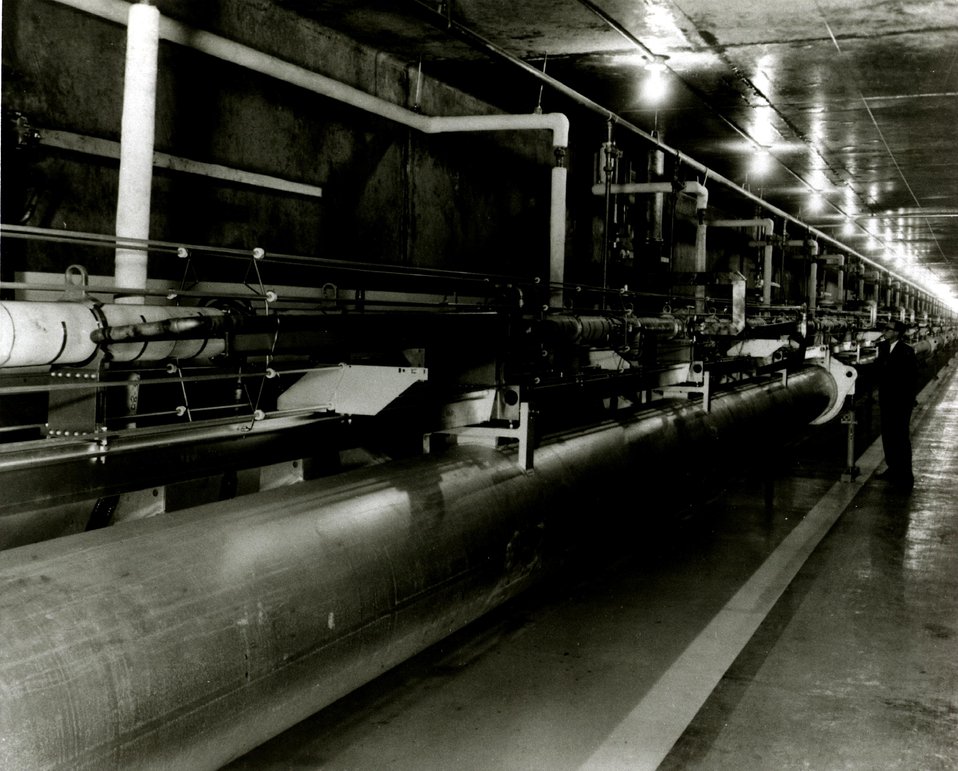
Completion of the $114 million, two-mile-long Stanford Linear Accelerator Center (SLAC). Circa 1966.